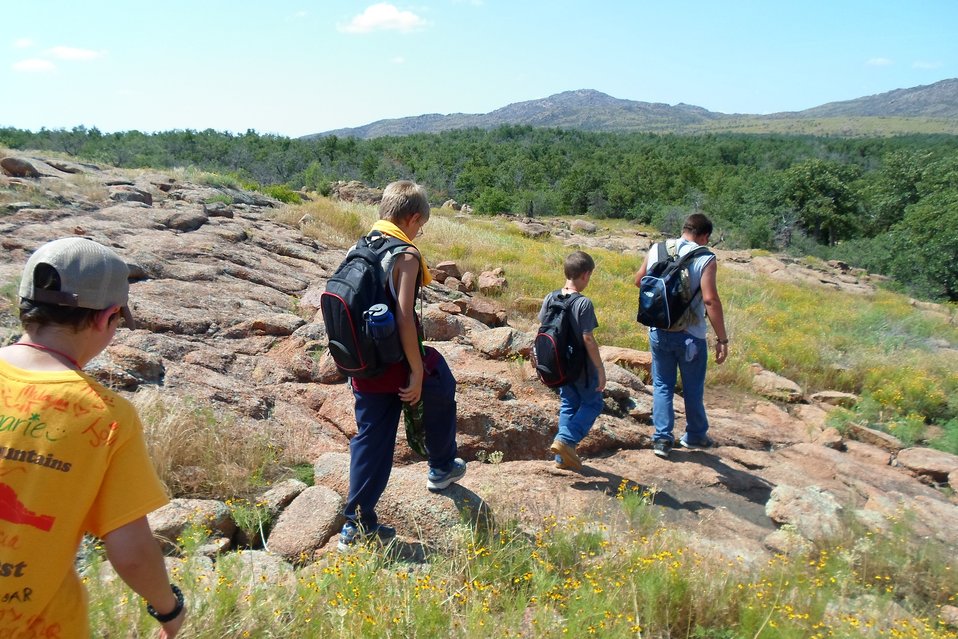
Wichita Mountains Nature Quest 2, 2012

Wichita Mountains National Wildlife Refuge, Oklahoma.